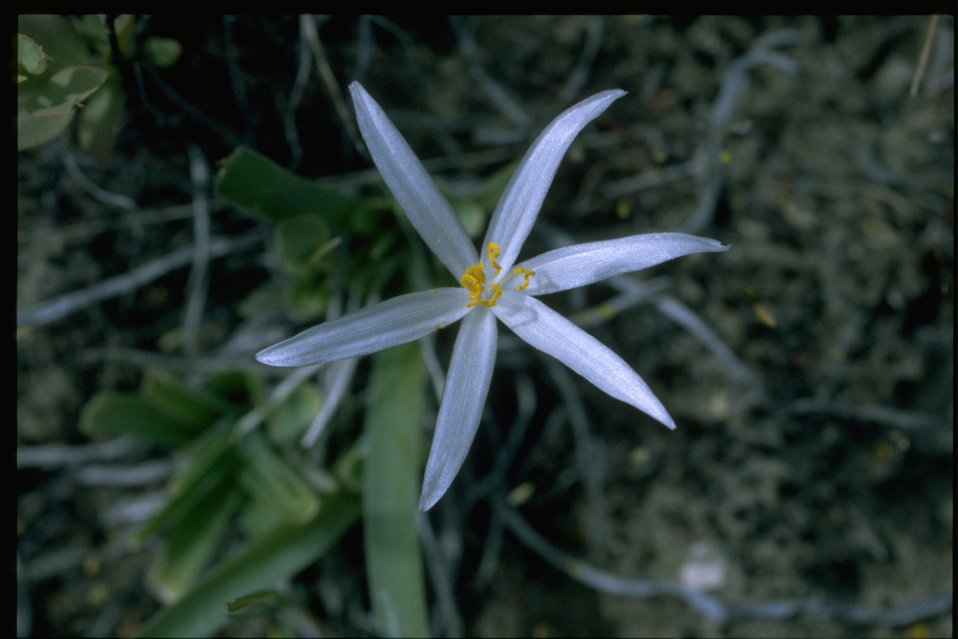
Medium shot of Star Lily; Sand Lily; Mountain Lily (Leucocrinum montanum).